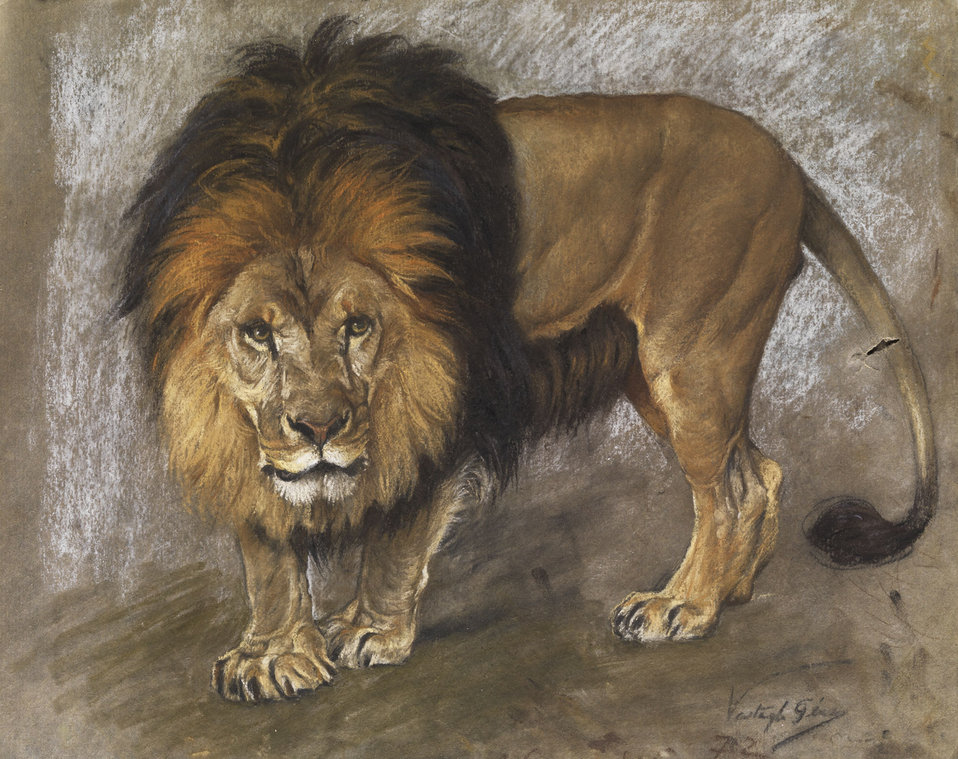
Deutsch: Schreitender Löwe. Gouache/Pastell auf Karton. 43 x 53,5 cm.Rechts unten signiert.